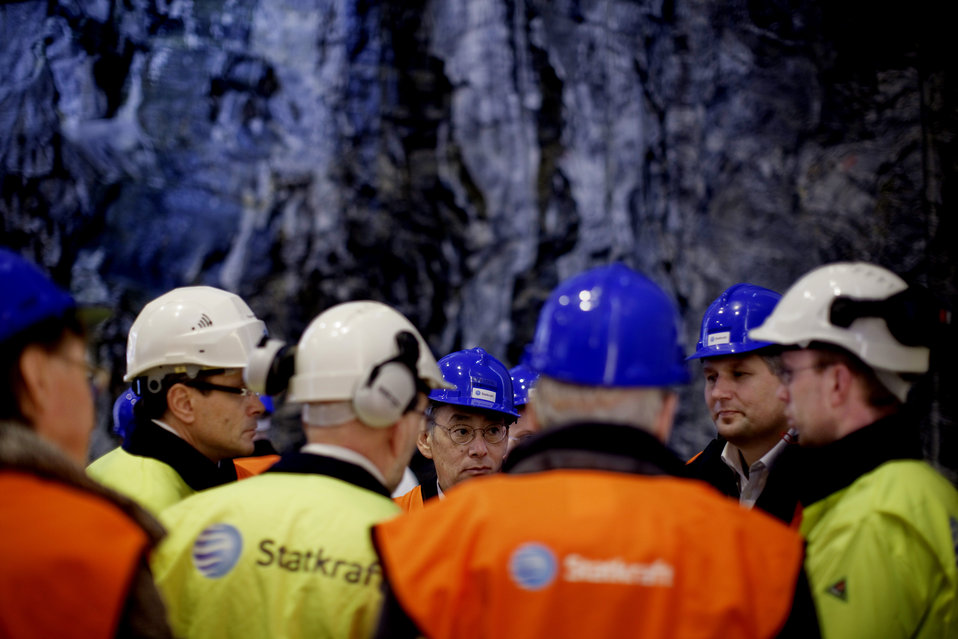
hydropower

KVILLDAL 20091212.
Olje- og energiminister, Terje Riis-Johansen og USAs energiminister Stephen Chu fikk lørdag omvisning på Ulla-Førre anlegget, Norges største kraftstasjon.
Foto: Stian Lysberg Solum / Scanpix